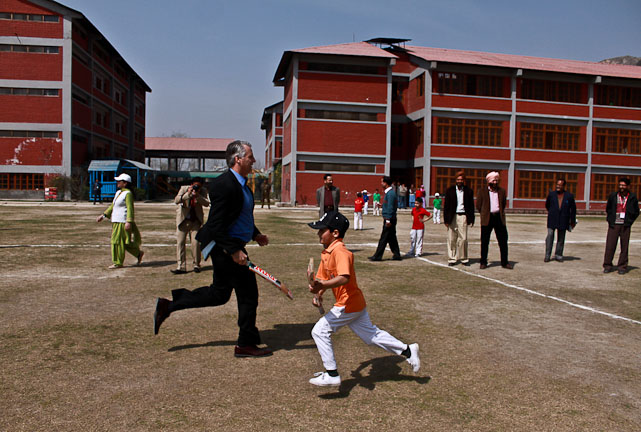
Ambassador Roemer Visits Jammu and Kashmir

U.S. Ambassador to India Timothy J. Roemer visits Jammu and Kashmir, March 17-18, 2011, to engage and listen to the people and connect with the youth of the state.